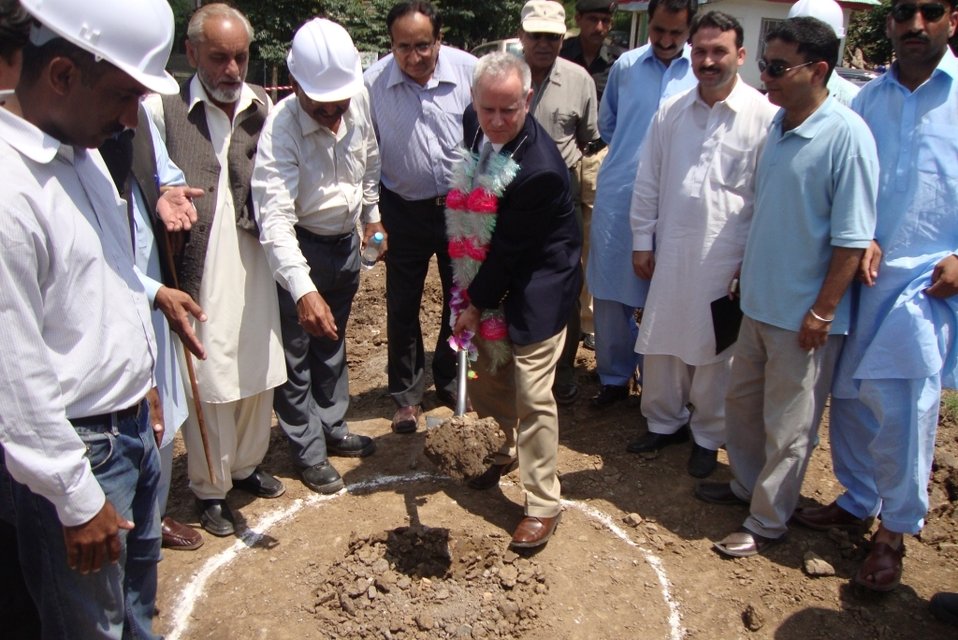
Ross Hagan, Deputy Director of USAID's Infrastructure Office, breaks ground at Dhikot Hospital